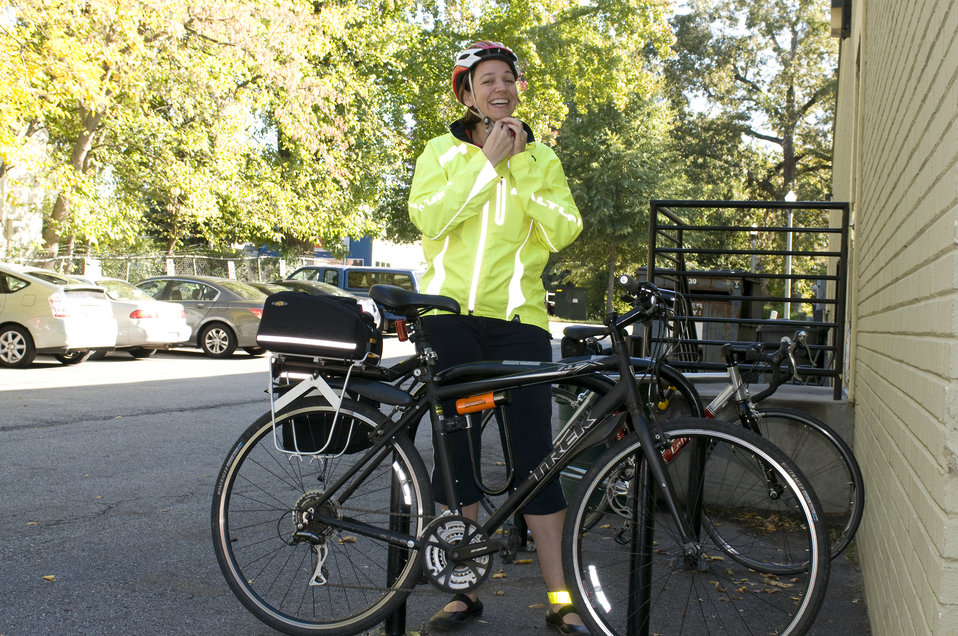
This photograph depicts a smiling female bicyclist, who was about to embark on a bicycle ride, but before which was in the process of adjusting the straps on her safety helmet. Note the brightly-colored windbreaker she was wearing, which would help drivers see her more easily